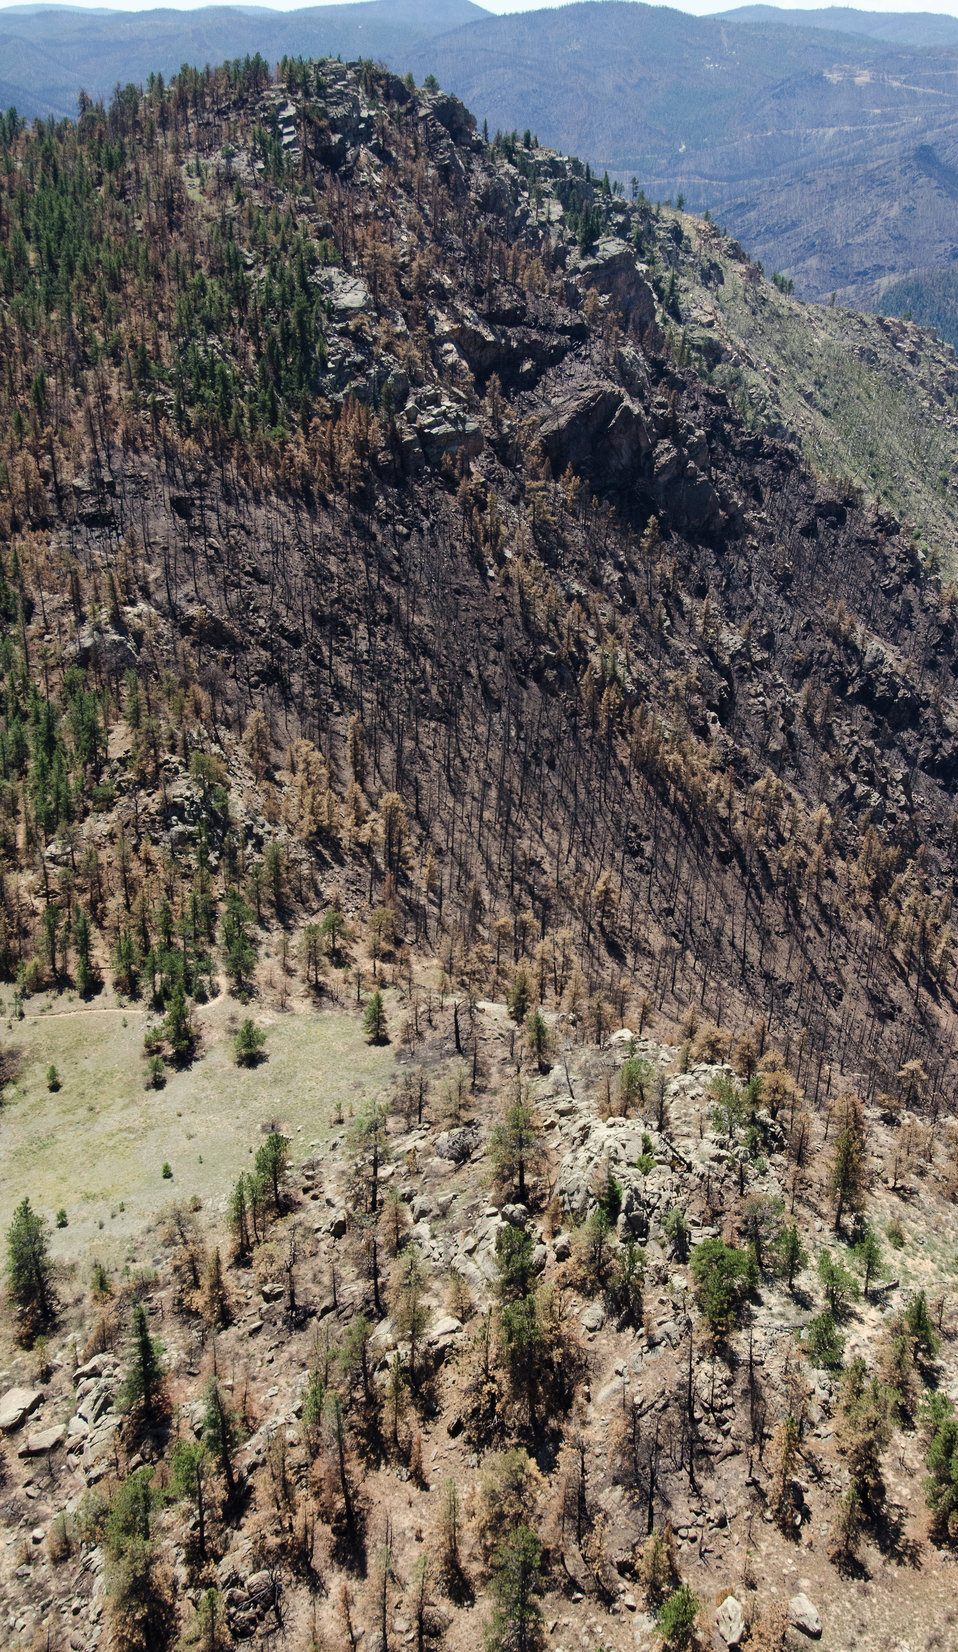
This is the Hewlett Gulch Trail, in the Poudre Canyon area, on Friday, July 20, 2012, near Fort Collins, Colorado. It was the start point of the Hewlett Gulch Fire on May 14. This mountain ridge saddle had a scenic view of the Roosevelt National Forest. It is also tinder dry and at a place where the slopes tend to funnel wind through this low point. The blackened areas clearly show the spread of the fire influenced by wind, terrain and available fuel. At its peak more than 400 firefighters were battling fires pushed by 50 mph winds. When the last embers were cooled, more than 12-square miles lay blacked at a cost of approximately 3.2 million dollars to fight. The aerial distribution of straw has successfully kept the Seaman Reservoir, drinking water resource for the City of Greeley, clean and clear. Forest Service lands receive straw, while private and other lands receive a seed mix and straw to promote ground cover plant growth on ash-covered lands. In total, 1,800 tons of straw will be applied during the 14-day operation. One quarter of the cost was paid by the City of Greeley and the U.S. Department of Agriculture funded the remainder. Unmitigated areas have turned famous Colorado clear water to nearly black flows of water heavily laden with ash, silt, and burnt debris that recent thunderstorms have already washed down from the mountainsides.